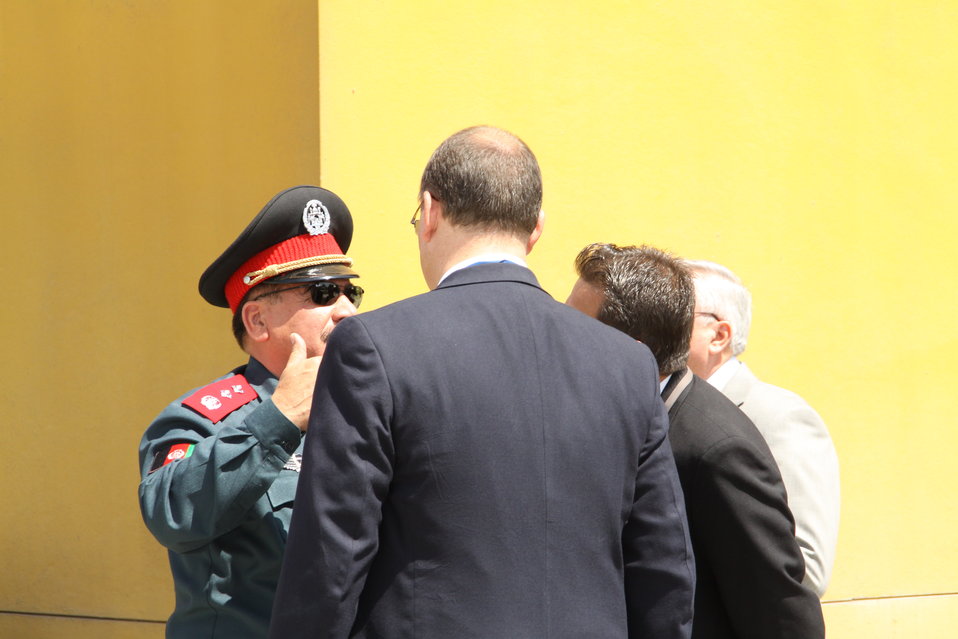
Kabul Official July 4th Celebration